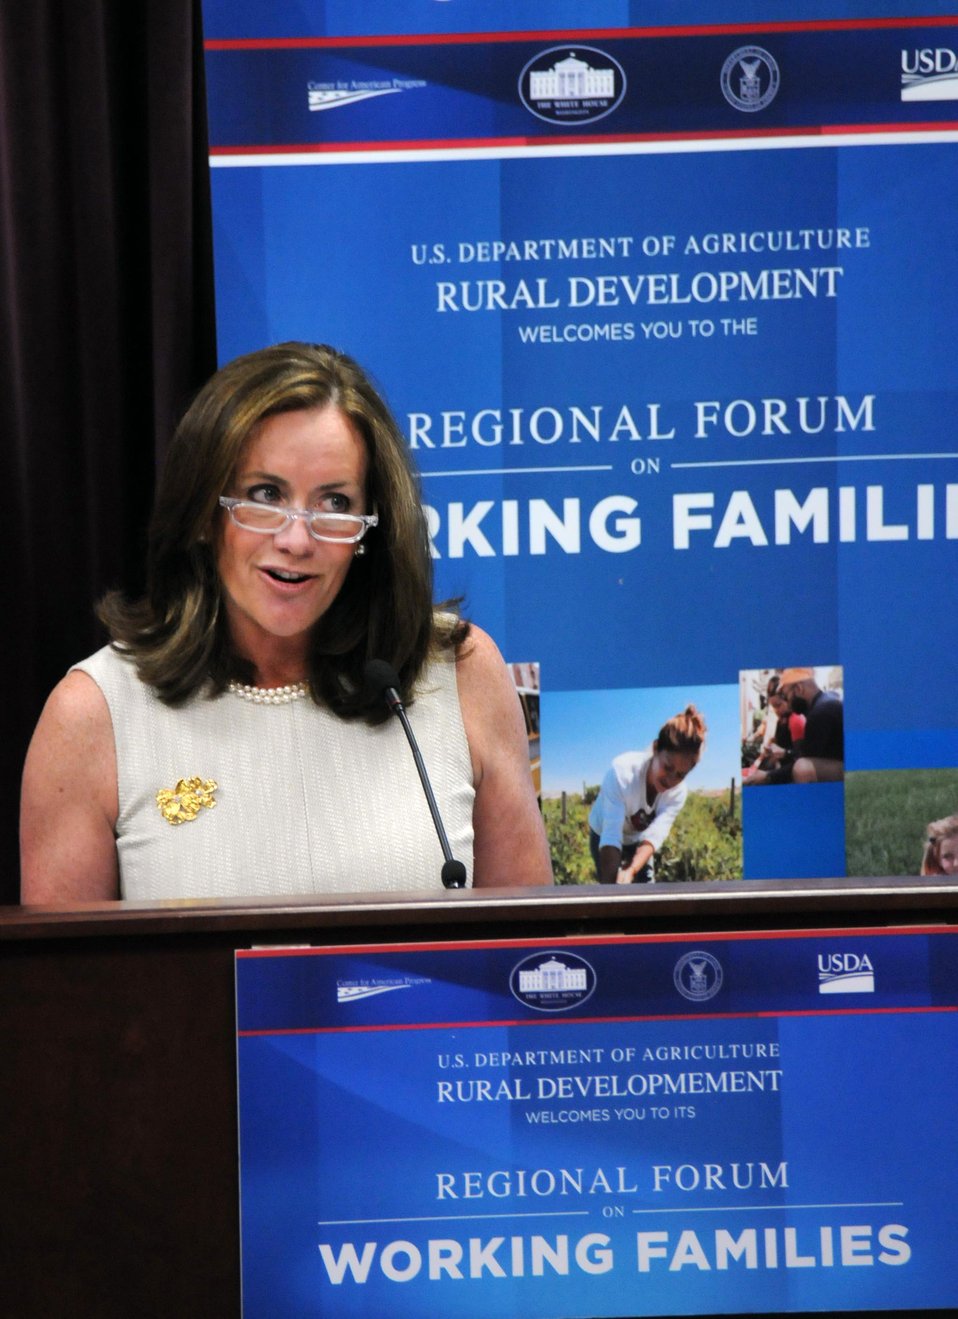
Virginia First Lady Dorothy McAuliffe speaks to stakeholders, government and regional leaders to identify initiatives for working families and businesses in rural areas during the White House Summit on Working Families in Petersburg, VA on Wednesday, Jun. 11, 2014. This forum is part of a series of regionally hosted conversations leading up to the Jun. 23, 2014, White House Summit on Working Families.